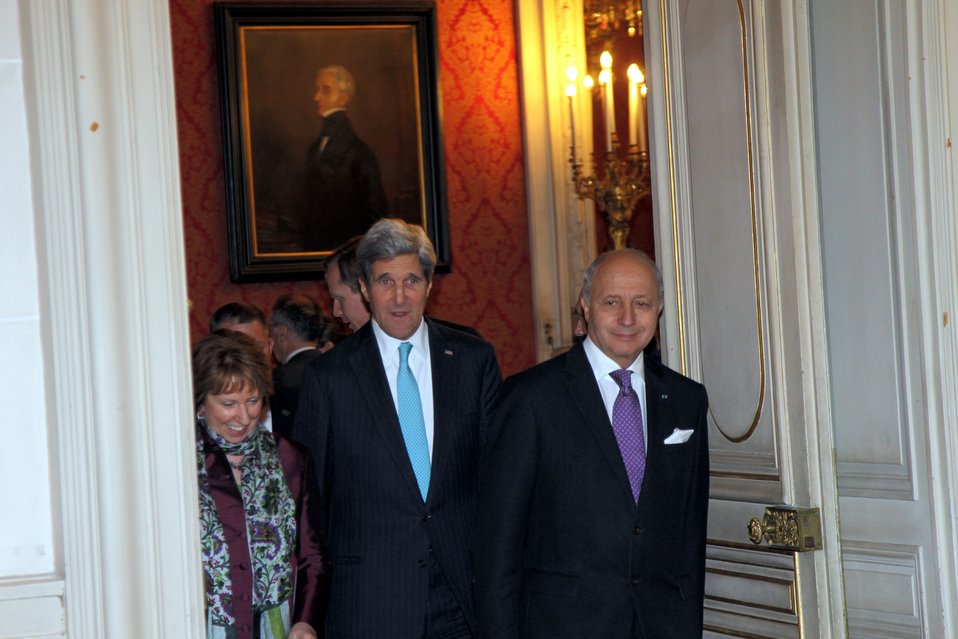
Secretary Kerry, EU High Representative Ashton, and French Foreign Minister Fabius

U.S. Secretary of State John Kerry, EU High Representative Catherine Ashton, and French Foreign Minister Laurent Fabius conclude a meeting on the Ukraine crisis in Paris, France, on March 5, 2014.